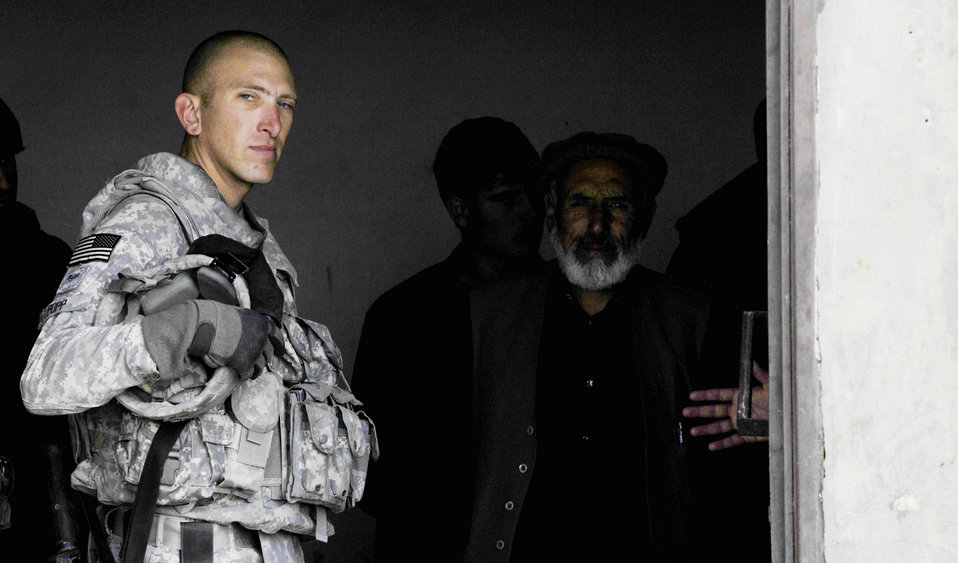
Security forces Airmen, Soldiers mentor Afghan prison guards

Staff Sgt. David Popp meets with Afghan prison officials during a mentoring session Oct. 28, 2009, in Qalat, Afghanistan. Sergeant Popp, a security forces Airman assigned to the Zabul Provincial Reconstruction Team, is deployed to the region from Creech Air Force Base, Nev. He works with the guards, helping them become better at handling prisoners within the compound. The mission is just one of many the PRT takes on, which can range from foot patrols to working with government officials.